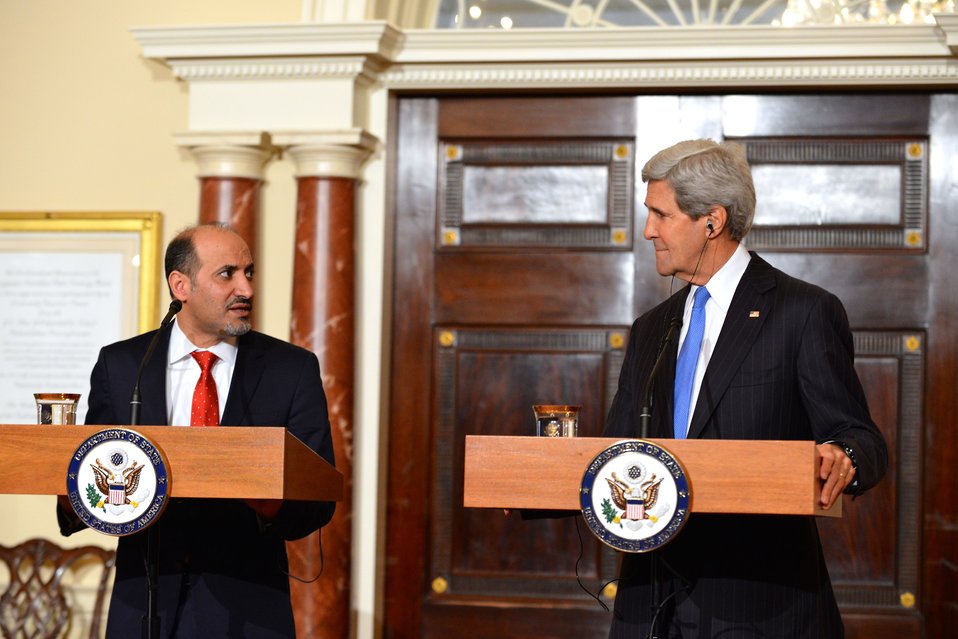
Secretary Kerry and Syrian Opposition Coalition President al-Jarba Address Reporters

U.S. Secretary of State John Kerry and Syrian Opposition Coalition President Ahmad al-Jarba members hold a joint news conference at the U.S. Department of State in Washington, D.C., on May 8, 2014.